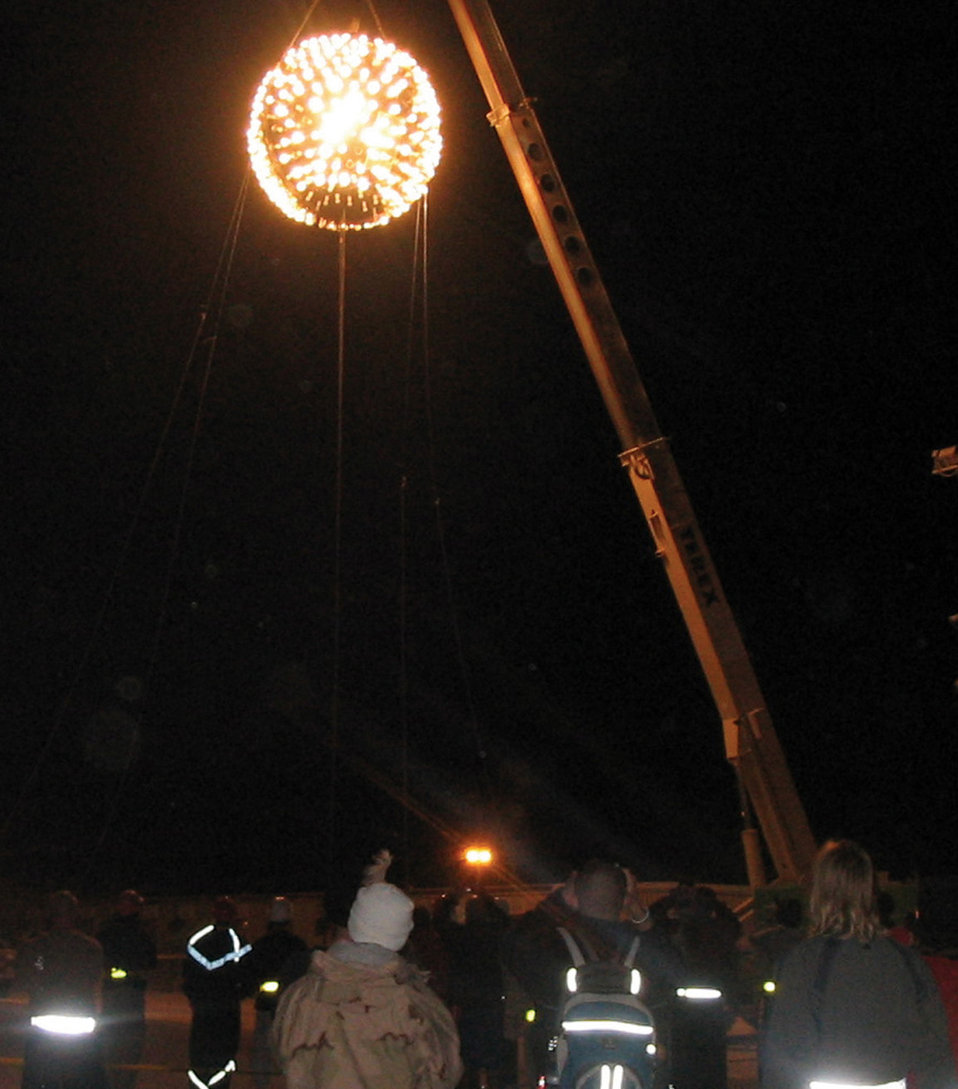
Airmen drop the ball

SOUTHWEST ASIA (AFPN) -- A 2,000-pound New Year's Eve Ball lights up the sky over this desert base. The ball, sculpted from a sewage tank, was the work of 379th Expeditionary Civil Engineering Squadron. They built it in about 72 hours. It was suspended approximately 100 feet in the air and lowered from a crane as the crowd counted down the seconds until 2006.